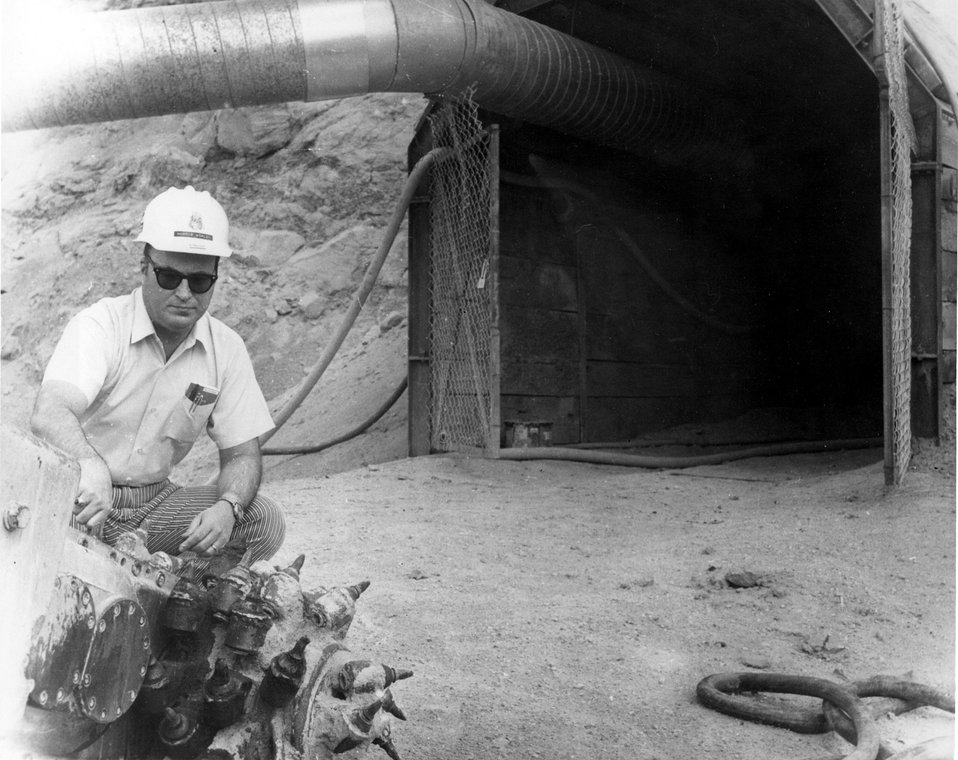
Morris Worley takes a look at the cutter head of an Alpine Continuous Miner Being tested in an Exxon underground mine in Wyoming. c. 1976